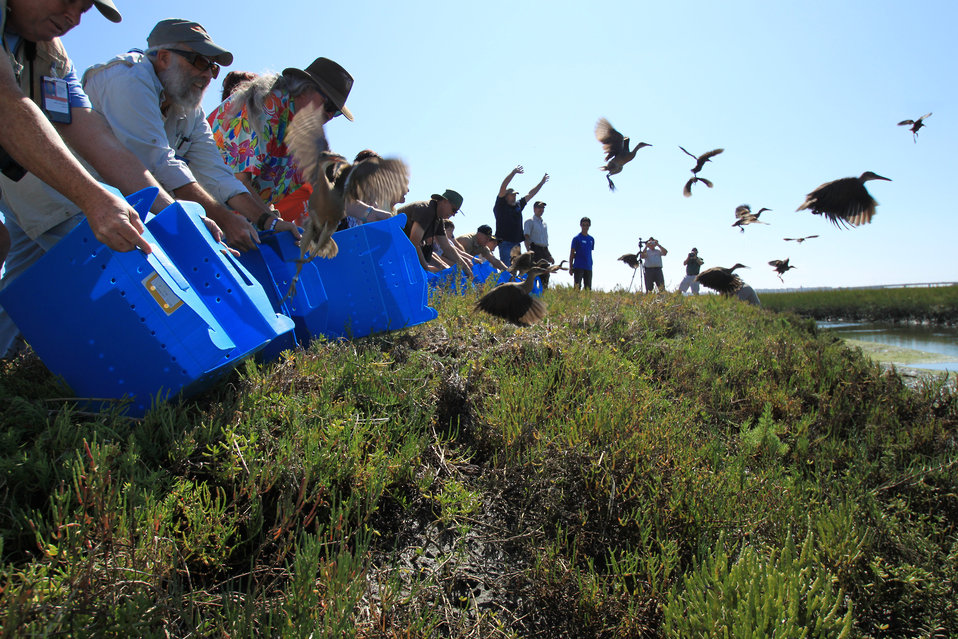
Clapper rails bursting from their boxes, onto Seal Beach National Wildlife Refuge. Courtesy Photo by Edgar Espinoza, Navy Environmental Division, Seal Beach Naval Weapons Station